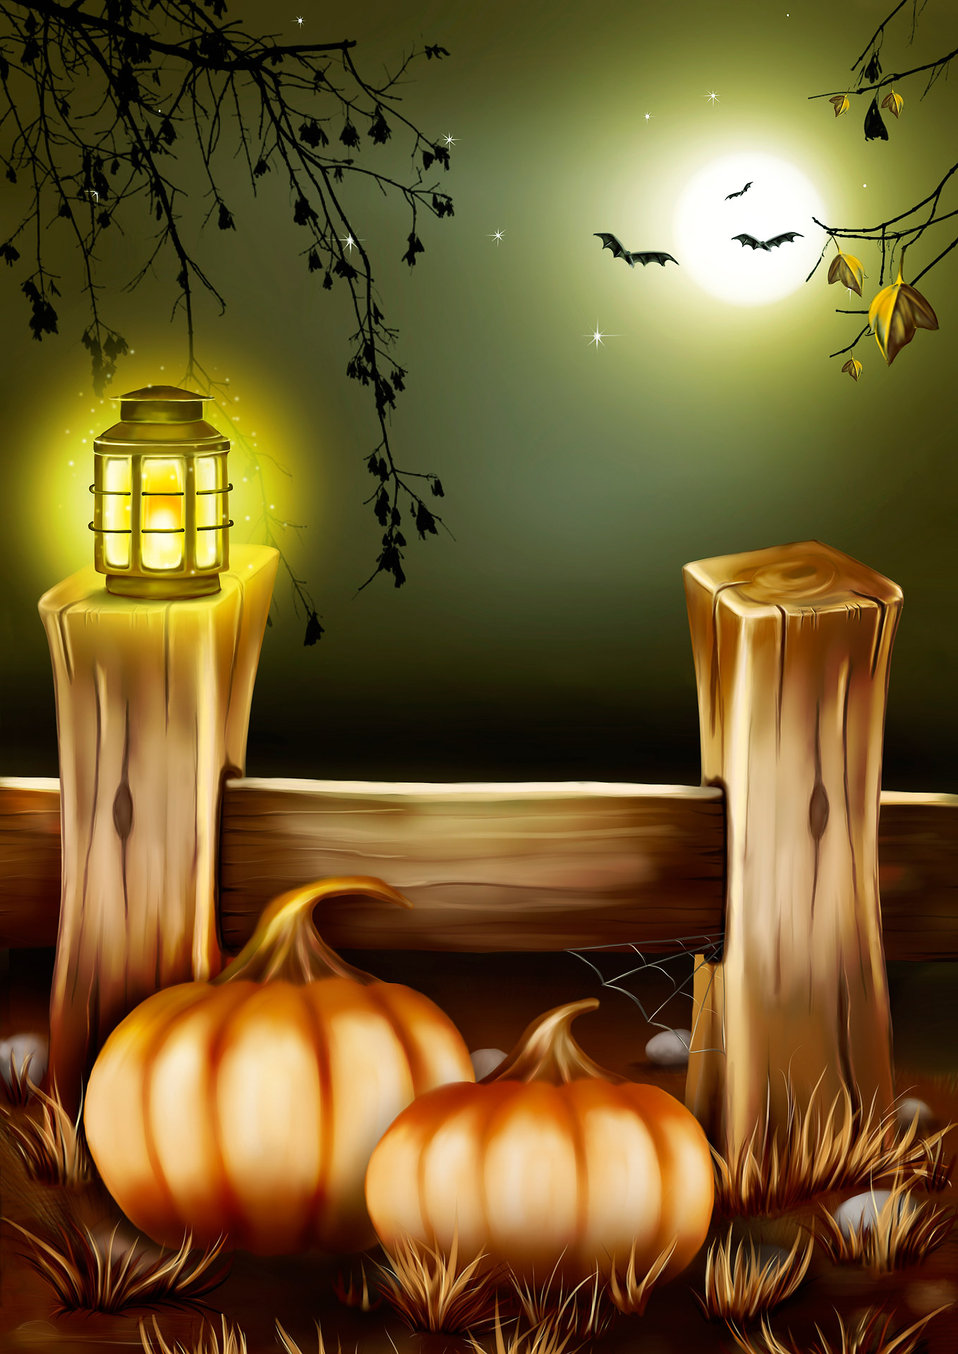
Halloween

Painted greeting cards for halloween.